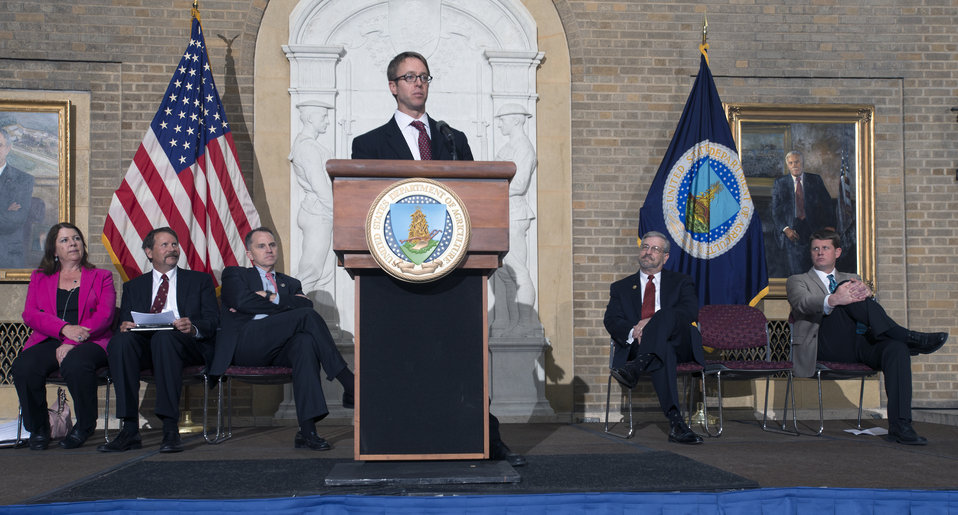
NRCS Chief Jason Weller spoke at an event yesterday hosted by Ducks Unlimited and the USA Rice Federation. Chief Weller celebrated the good work of rice farmers who provide critical habitat for ducks and other migratory waterfowl.